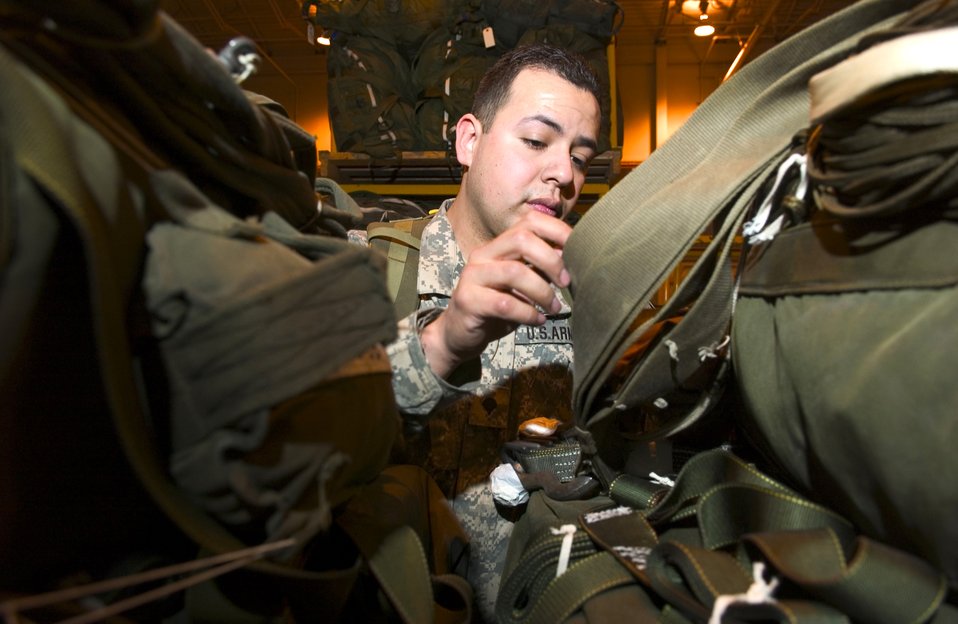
Reserve wing, Army unit join forces at Red Flag-Alaska

Army Spc. Salvador Garcia-Espinosa ensures that container delivery systems are secure and readied for transport at Elmendorf Air Force Base, Alaska, as part of Red Flag-Alaska 06-2 exercises on Friday, April 28, 2006. Specialist Garcia-Espinosa is with the 167th Support Battalion at Fort Richardson, Alaska.